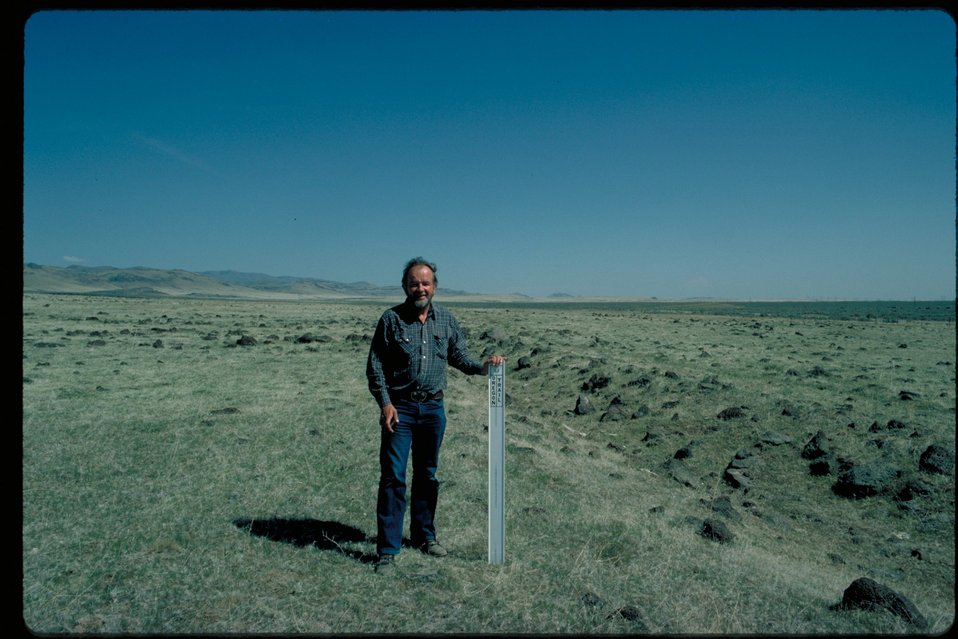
Oregon Trail Northwest of Canyon Creek Lower Snake River District